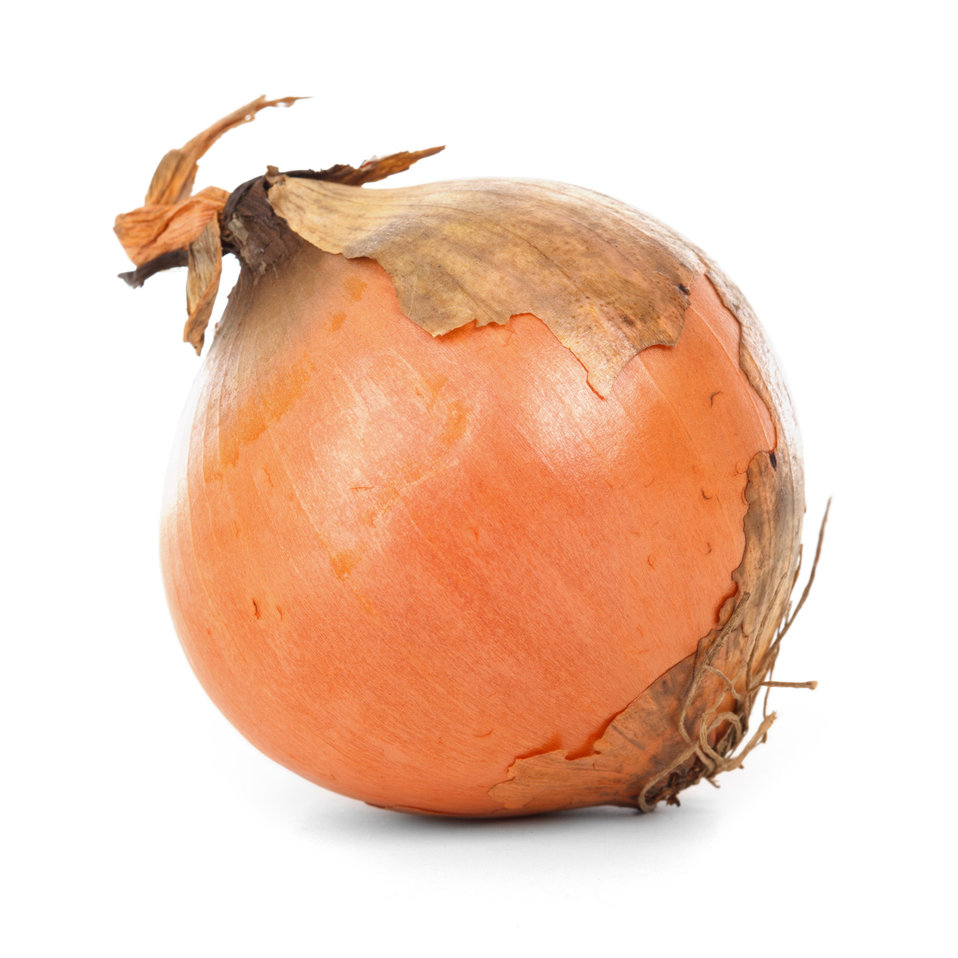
Onion isolated

A single fresh onion isolated on white background.